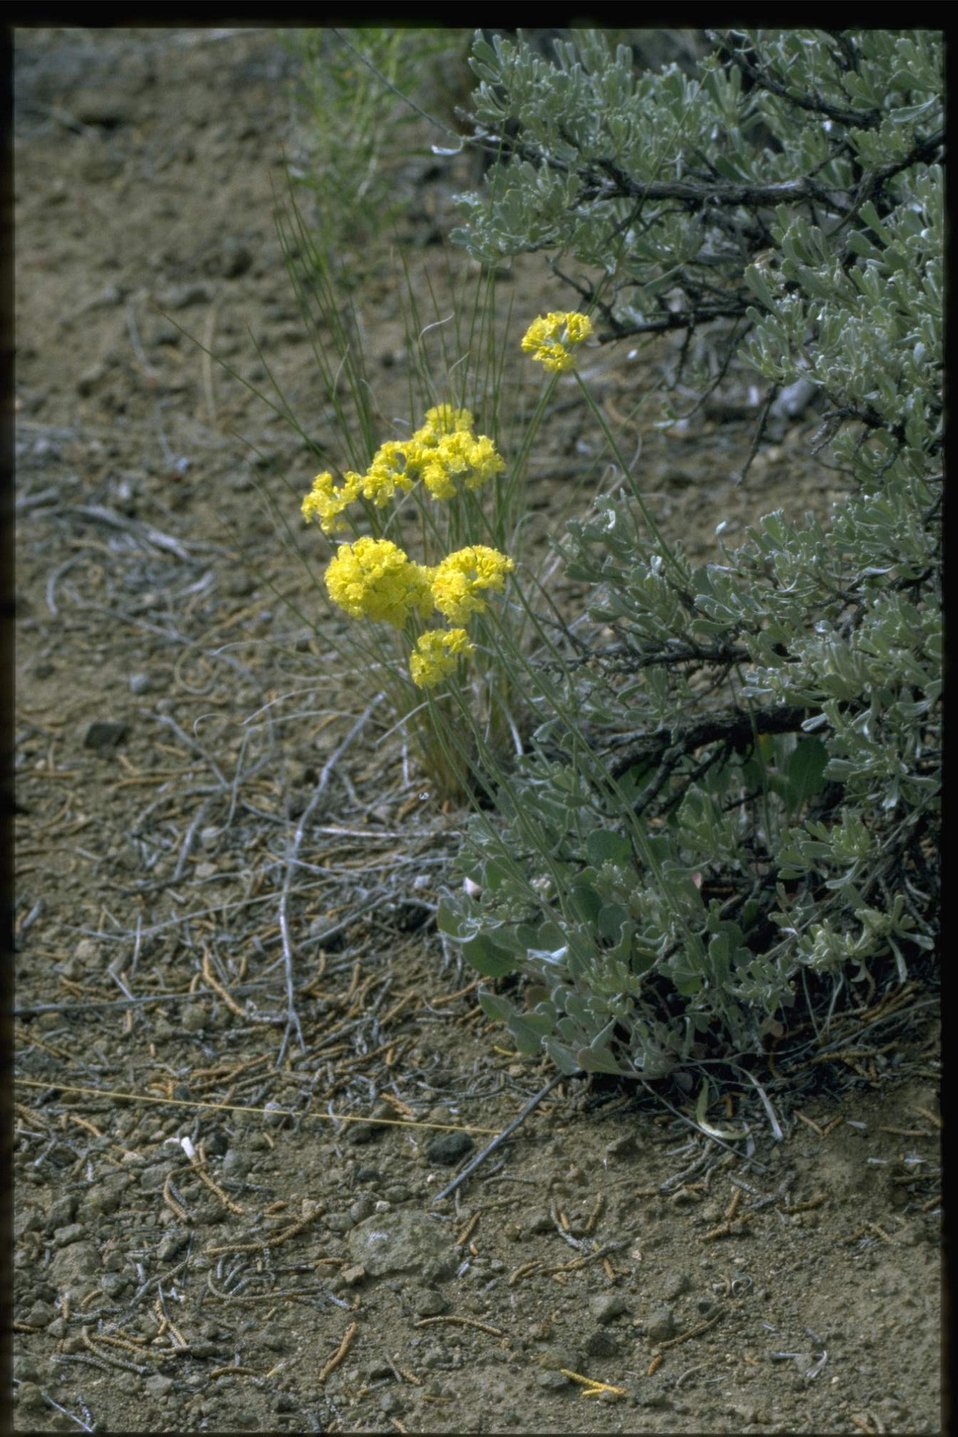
Medium shot of buckwheat wildflowers.